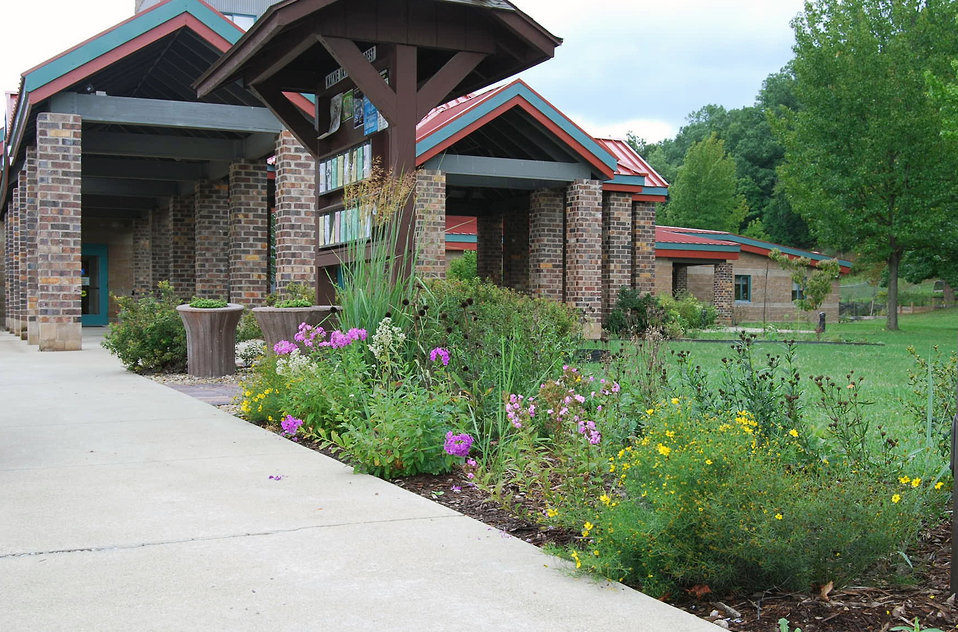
Pollinator 3

The front entrance garden at the Wayne National Forest, OH includes Indian grass, St. John’s wort, woodland stonecrop, coreopsis, and other native plants.